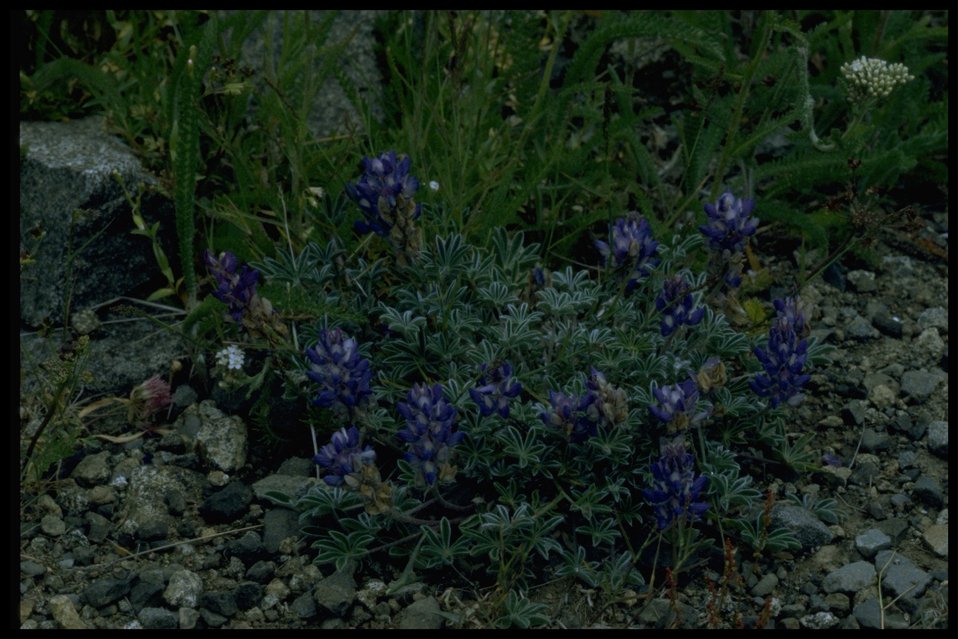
Farshot of lupine wildflowers (genus Lupinus).